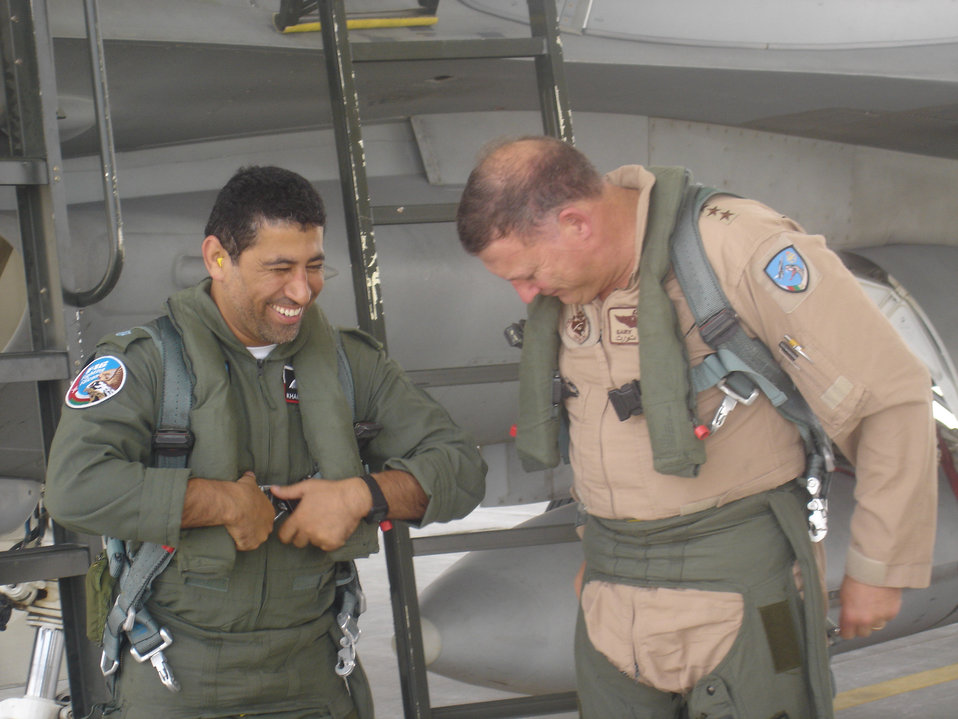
CENTCOM leader visits Oman, builds relationships

Maj. Khamis al-Ghafri and Lt. Gen. Gary North disembark from an Omani F-16 Fighting Falcon May 29 following a training flight. The aviators flew together in a two-seat F-16 model as a part of a two-ship formation that trained at local ranges around Thumrait, Oman. Major Khamis is with the 18th Squadron of the Royal Air Force Oman and General North is the U.S. Central Command Air Forces commander.